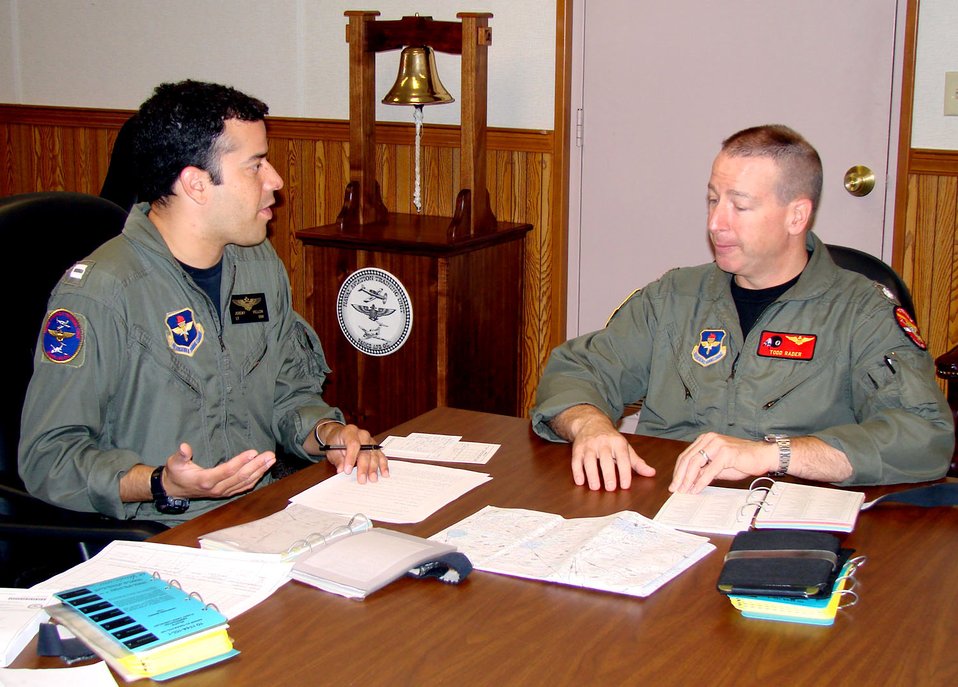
Navy officer leads AF squadron, celebrates Navy birthday

Navy Lt. Jeremy Vellon (left) briefs Navy Cmdr. Todd Rader Oct. 4 on mission details for their morning T-6 Texan II sortie. Commander Rader is the 8th Flying Training Squadron commander at Vance Air Force Base, Okla. He took command of the 8th FTS in June and carries on a tradition of having a Navy officer rotate every other year as commanding officer of the unit. Lieutenant Vellon is an 8th FTS instructor pilot.